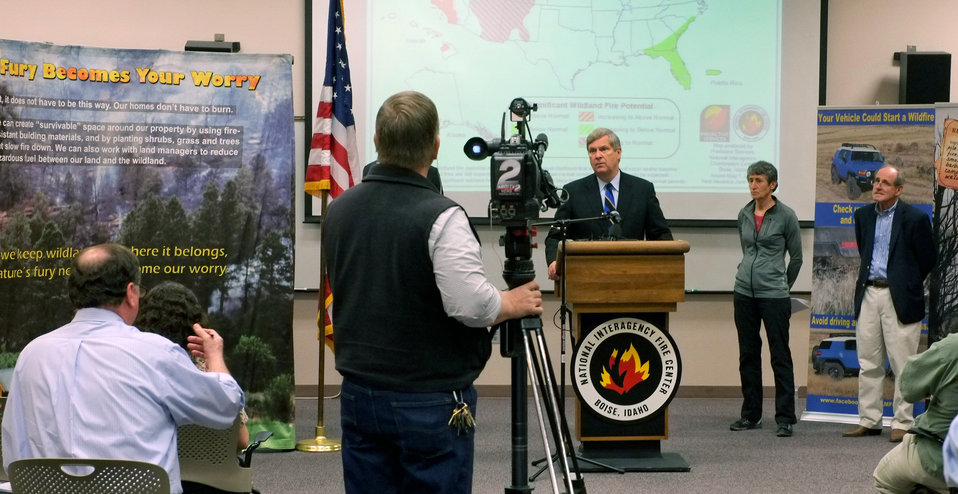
Agriculture Secretary Tom Vilsack speaks to employees at the National Interagency Fire Center (NIFC) in Boise, ID on Monday, May 13, 2013. Agriculture Secretary Vilsack and Interior Secretary Jewell provided an outlook for the upcoming fire season and outlined the federal government’s efforts to ensure collaboration in protecting Americans from wildfire.